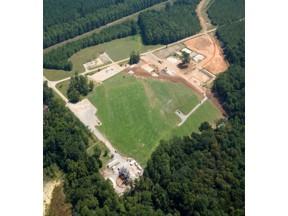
Savannah River T-Area

An aerial photo of Savannah River T-Area after site cleanup operations were completed.